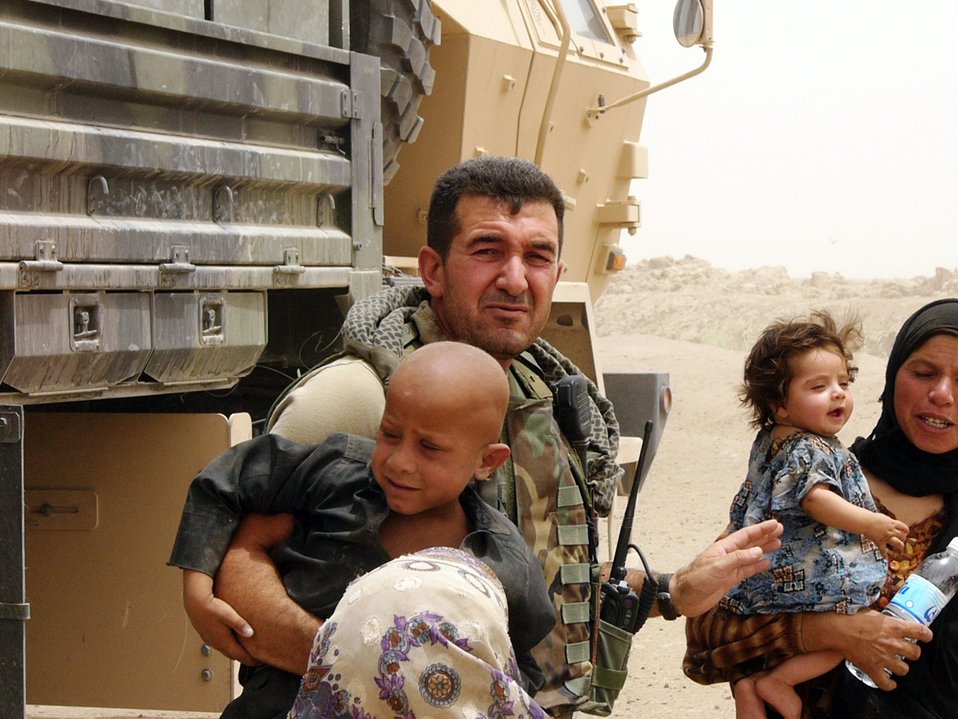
IRAQ (AFPN) -- Sam helps some local children. He has been involved in many projects aimed at helping the Iraqi people in the local area. Airmen and Soldiers sometimes join their resources to deliver aid to local communities. Many of the families are Bedouins, living off of the land, to which Saddam Hussein halted the flow of irrigation.